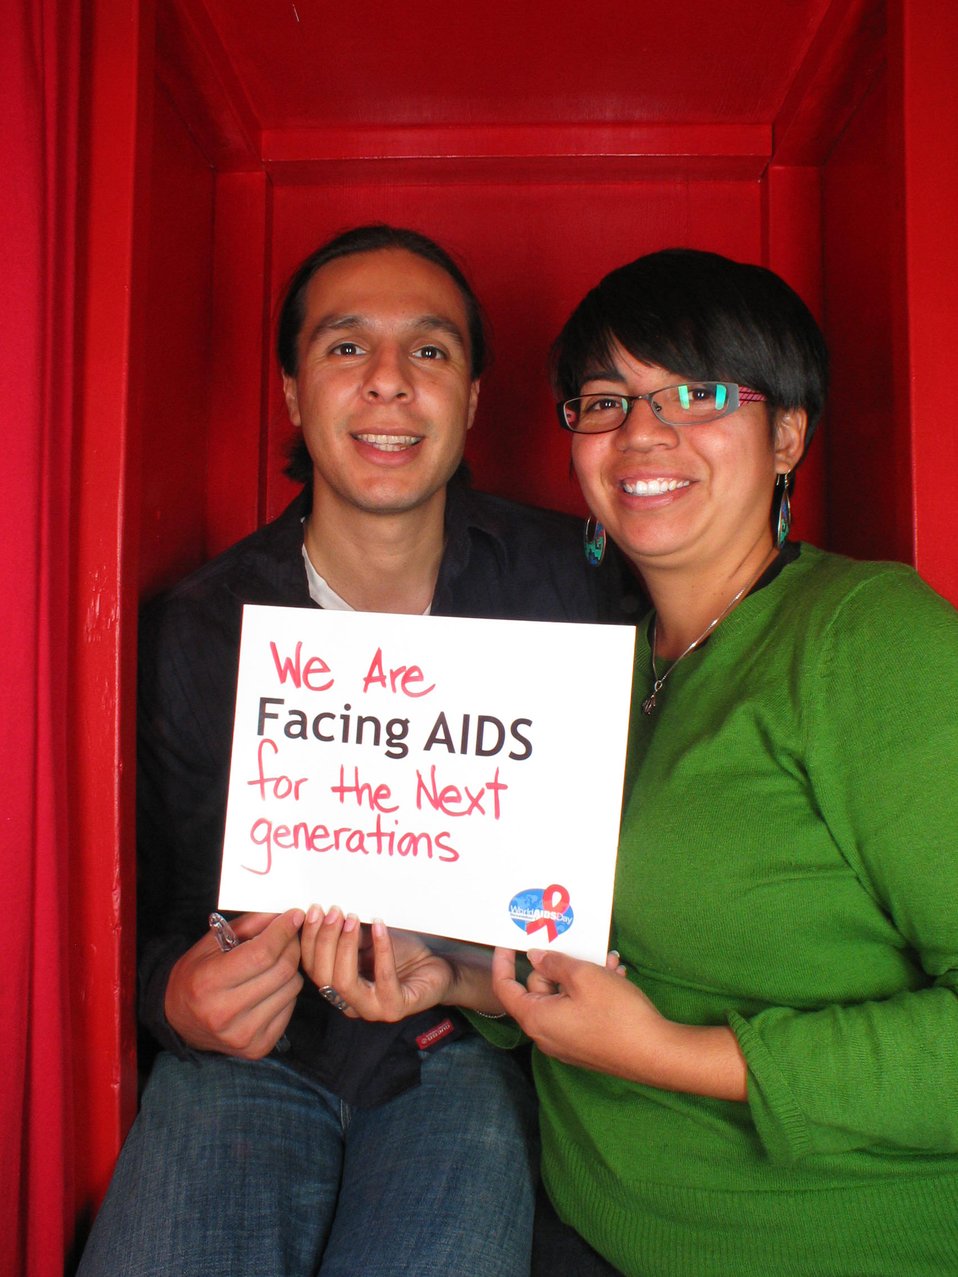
We are Facing AIDS for the next generations.